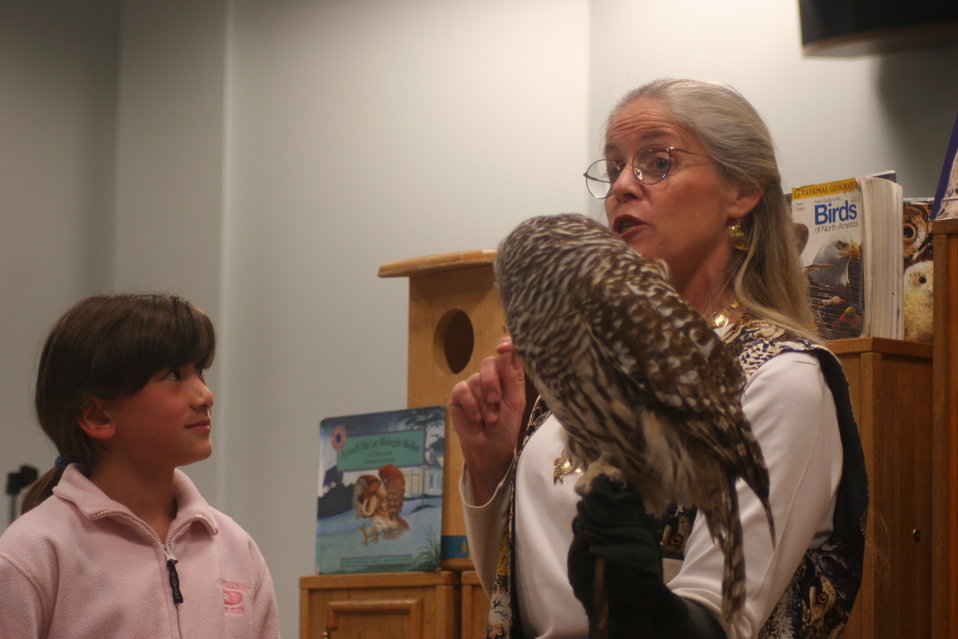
Great Horned Owl

Live bird demonstration